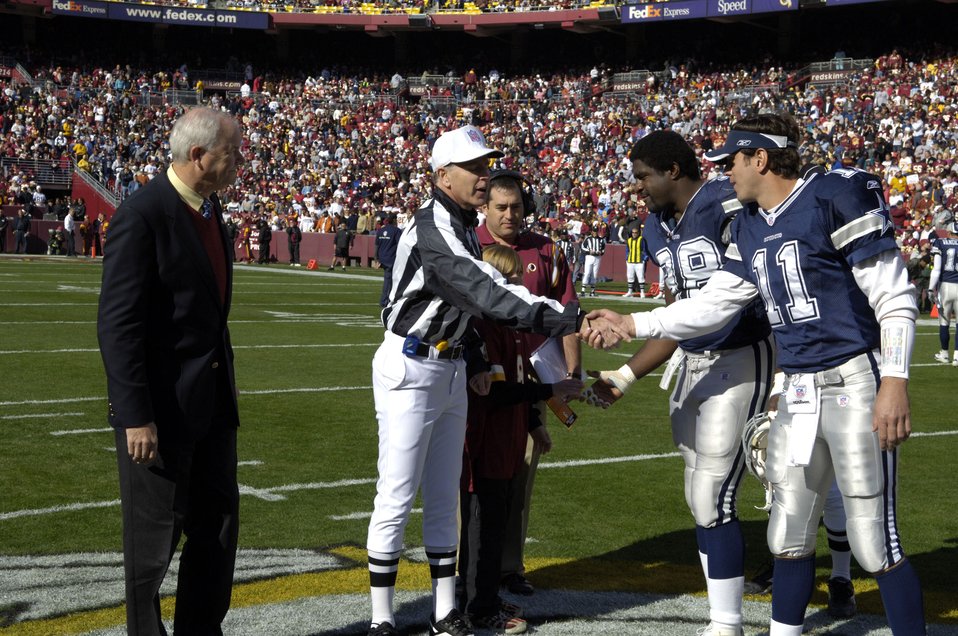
NFL hosts Air Force Appreciation Day

Secretary of the Air Force Michael W. Wynne officiates the coin toss for the National League Football game between the Washington Redskins and the Dallas Cowboys at FedEx Field in Landover, Md. on Nov. 5. This was just one of several activities that took place during Air Force Appreciation Day there.